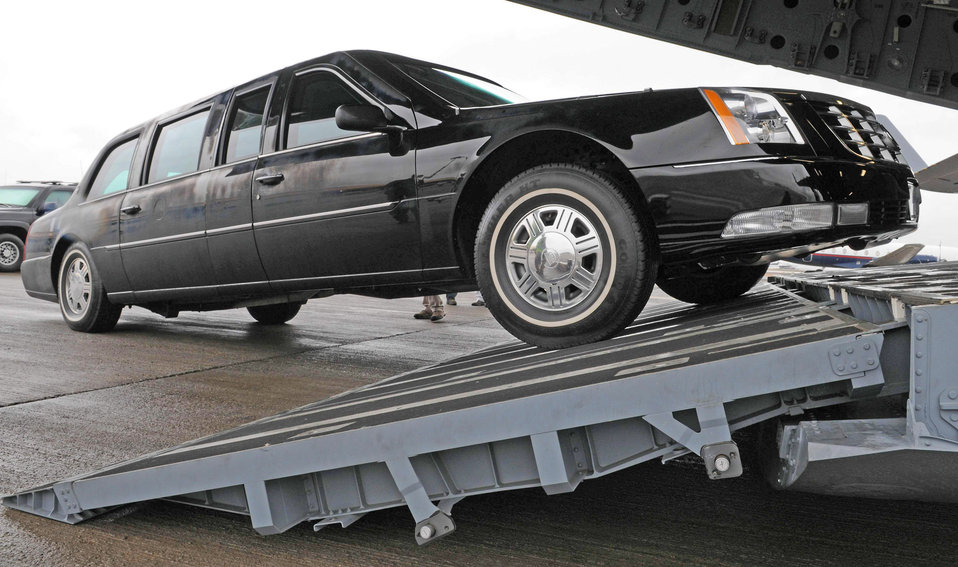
17th Air Force members support presidential visit to Ghana

A presidential limousine backs off of a C-17 GLobemaster III at Kotoka International Airport July 8 at Accra, Ghana. More than 150 Airmen, Sailors and Marines are in Ghana and Sailors aboard the USS Iwo Jima, making up a task force supporting President Barack Obama's visit July 10 and 11.